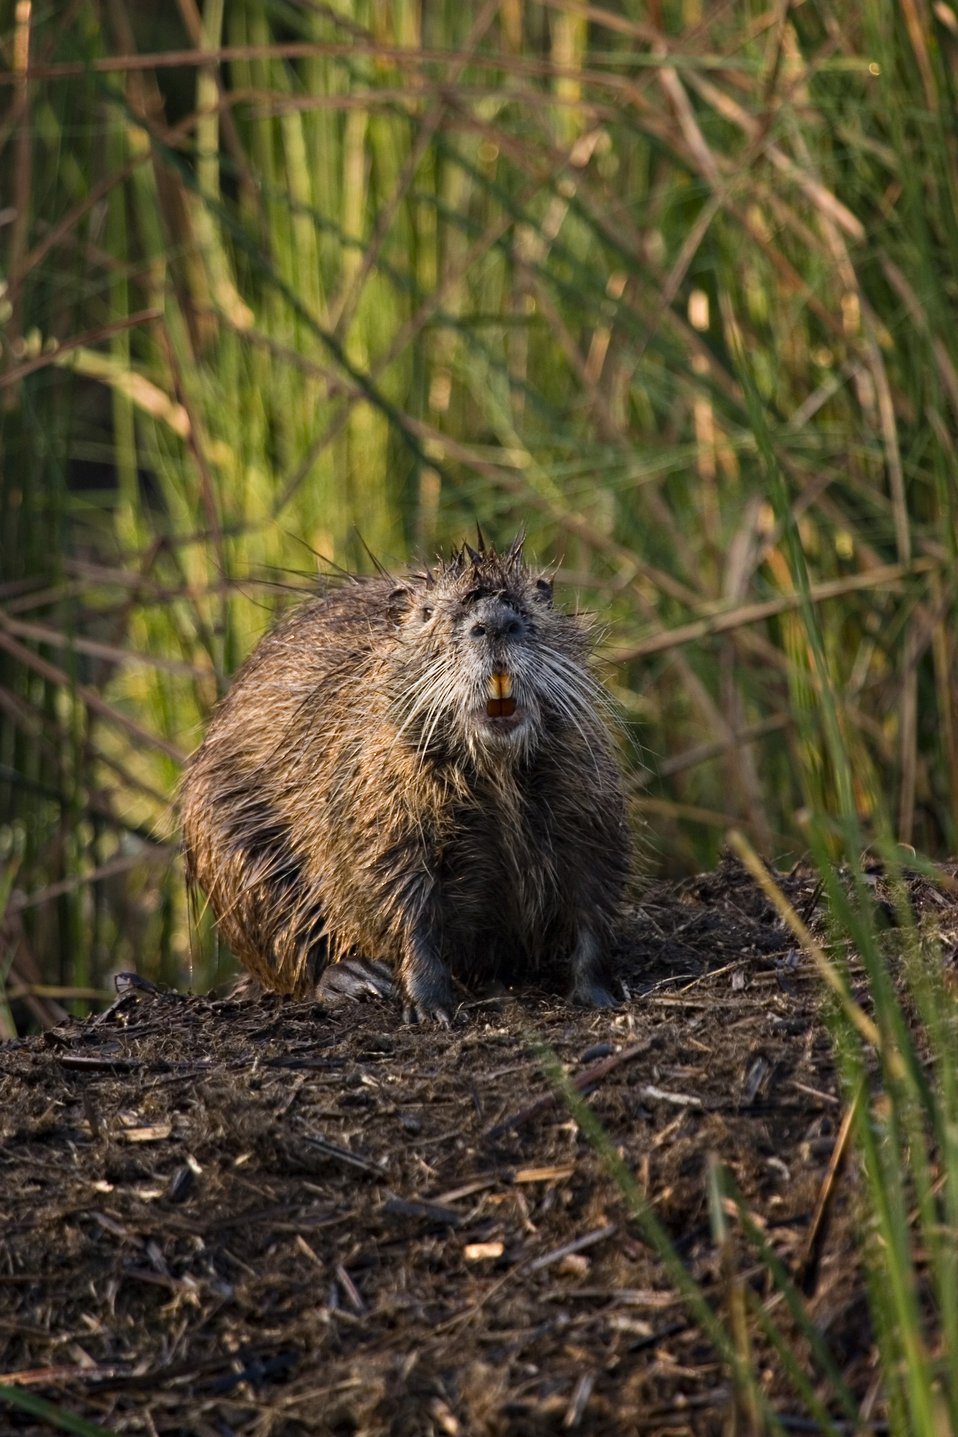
Nutria, a semi-aquatic South American rodent, causes significant damage in U.S. wetlands resulting in their classification as an invasive species. The feeding habits of nutria damage the fibrous root networks that bind aquatic plants together, quickly reducing wetlands to unconsolidated mudflats and, eventually, open water.